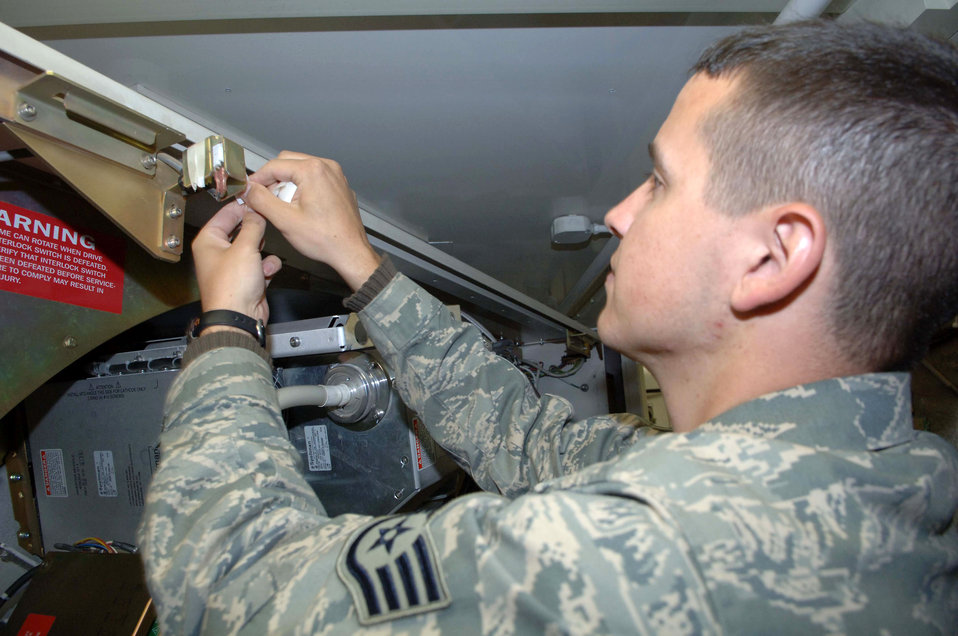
They'll get your motor running

Staff Sgt. Orlando Ortega covers the power switch on a computerized tomography machine Dec. 31 at the Air Force Theater Hospital at Balad Air Base, Iraq. Sergeant Ortega is deployed from Barksdale Air Force Base, La.